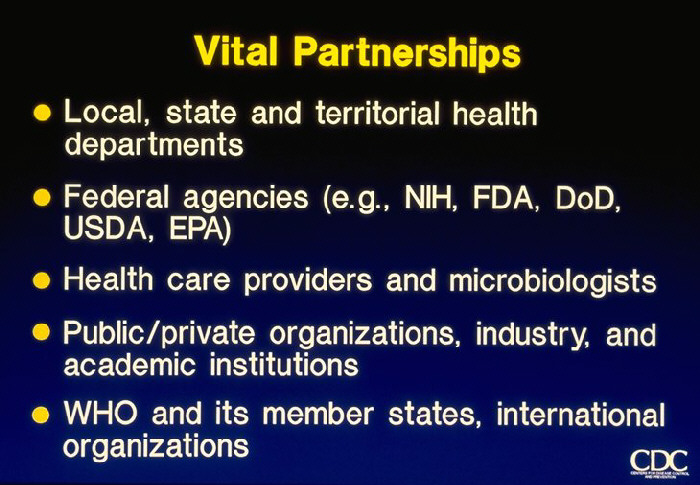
Vital Partnerships (listing)